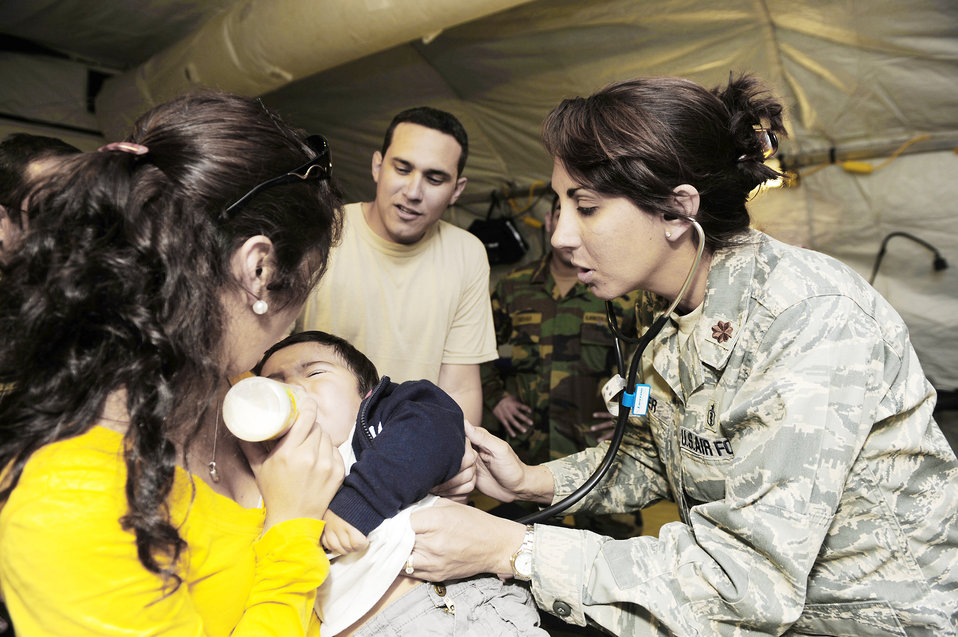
It takes only a minute

Maj. Deena Sutter checks the heartbeat of an ill child at an expeditionary hospital March 14, 2010, in Angol, Chile. An Air Force medical team along with members of the Chilean army built a mobile hospital here to augment medical services in the region. Major Sutter is assigned to the 59th Medical Wing, Wilford Hall Medical Center at Lackland Air Force Base, Texas.